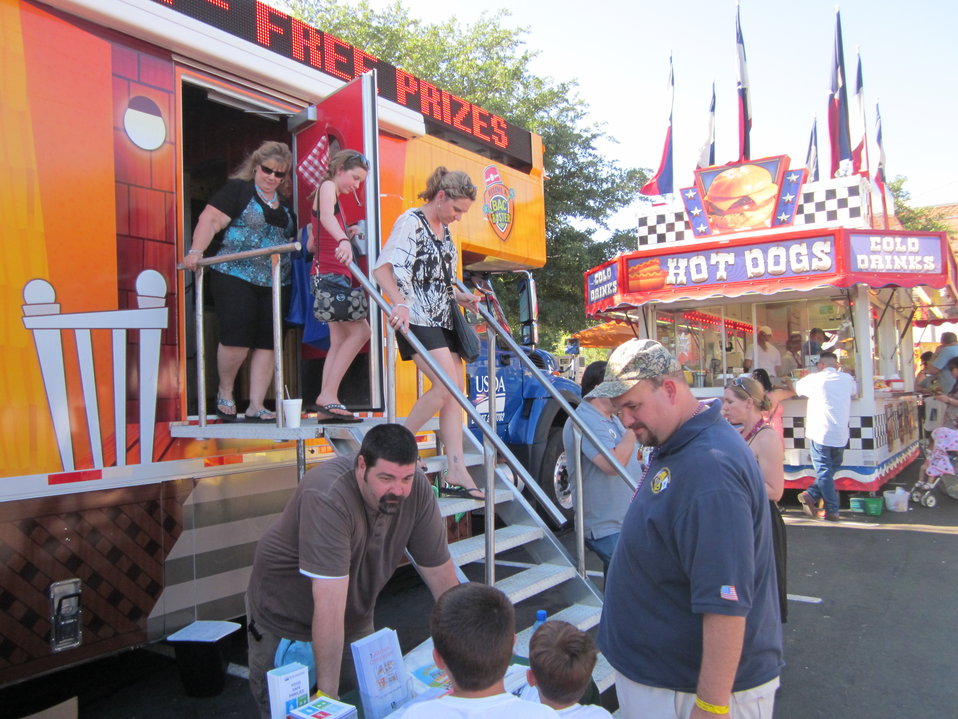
FSDZ Oyster Bake TX

Visitors exit the U.S. Department of Agriculture’s (USDA) Food Safety and Inspection Service (FSIS) Food Safety Discovery Zone at the Fiesta Oyster Bake on St. Mary’s University campus in San Antonio, TX on April 21, 2012. The USDA FSIS Food Safety Discovery Zone vehicle allows visitors to experience hands-on food safety lessons. The vehicle stops in the smallest towns and big cities like Dallas to educate people on preventing foodborne illness. Real food safety experts who work in meat and poultry plants near each town, such as veterinarians, investigators, and other FSIS personnel staff the events.